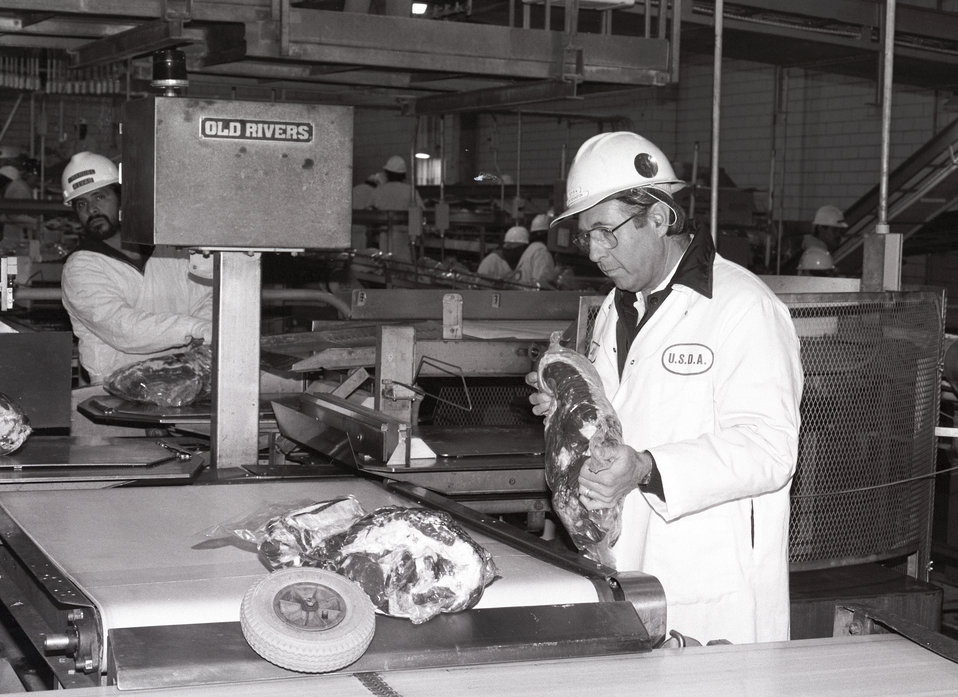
U.S. Department of Agriculture (USDA) Food Safety Inspection Service (FSIS) inspectors inspect beef using a Streamline Inspection System (SIS) at a processing plant in Plainview, TX on January 22, 1991.